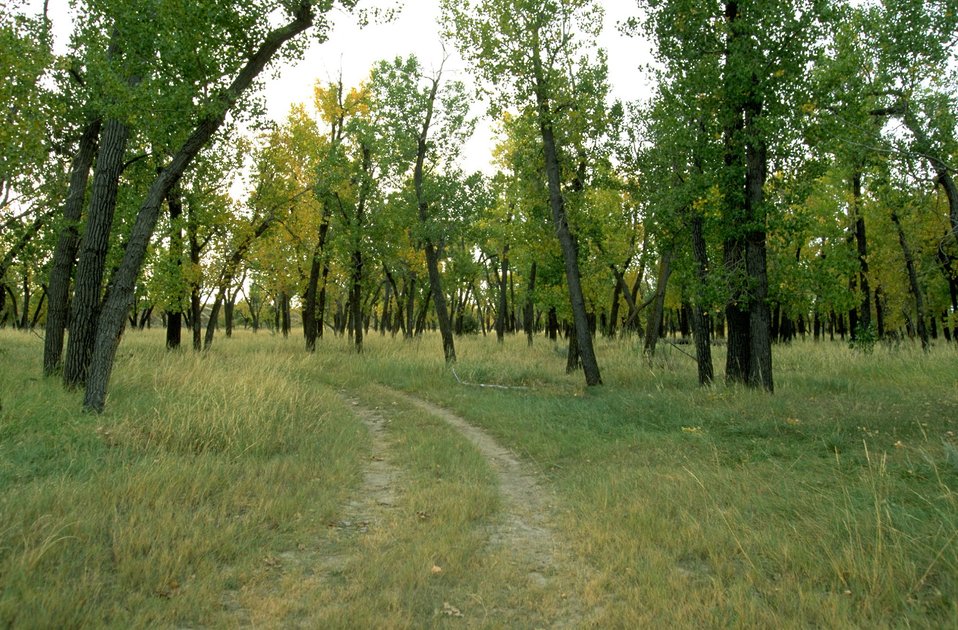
Cottonwood trees at the confluence of Yellowstone and Powder Rivers